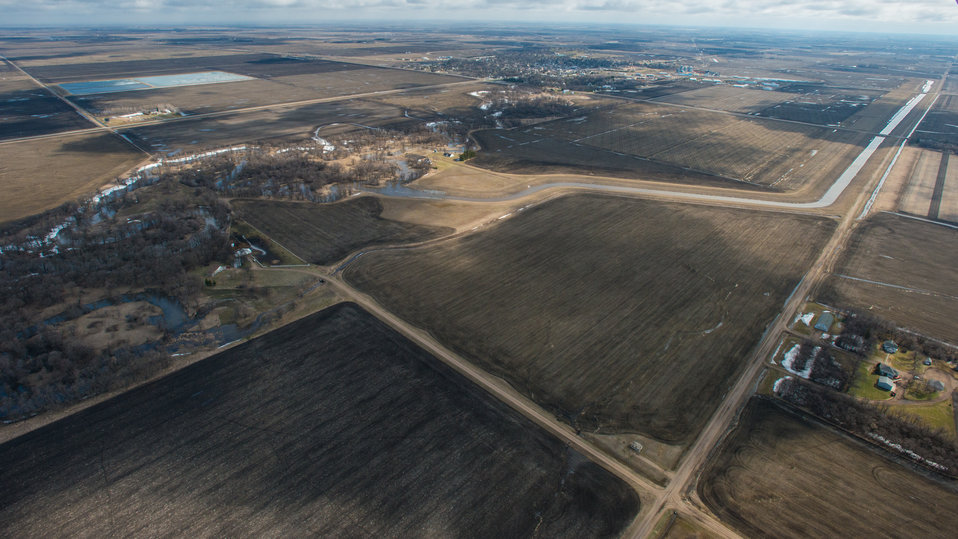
Snake River Diversion, a Public Law PL83-566 Small Watershed Program, at Warren, MN, on Wednesday, May 1, 2013. For information about this and other programs from the USDA Red River Basin Initiative (RRBI) please see www.mn.nrcs.usda.gov/news/features13/RRBI.html.